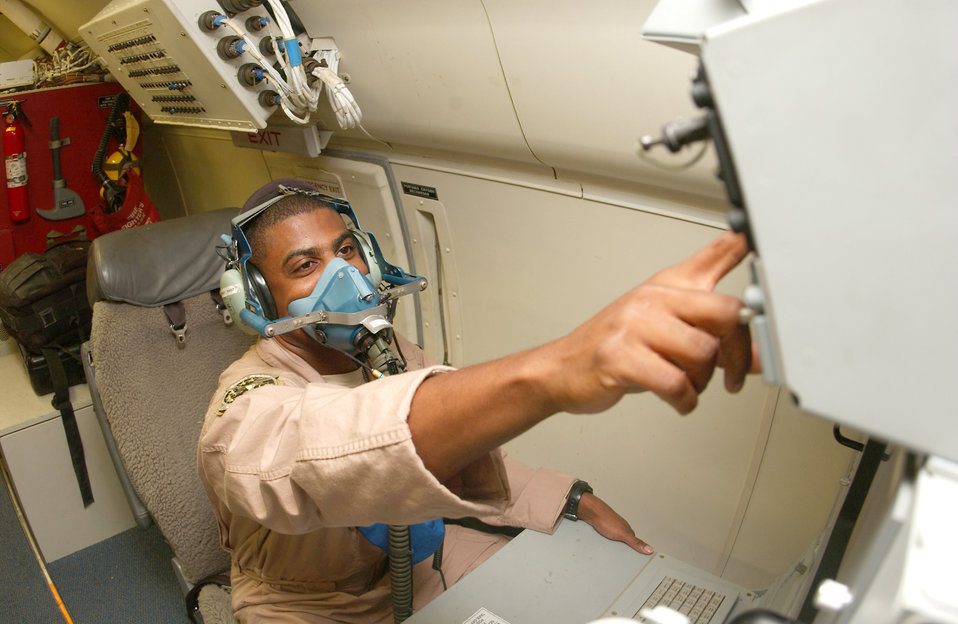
Sailing the skies

Maj. Sean Godfrey ensures his oxygen mask is in proper working order prior to departure Nov. 30 on an E-8C Joint STARS mission. Major Godfrey is assigned to the 12th Expeditionary Airborne Command and Control Squadron. The flight over Iraq marked 20,000 flying hours in support of Operation Iraqi Freedom by the Boeing 707 equipped with the Joint Surveillance Target Attack Radar System. Accomplishing that feat since early 2003 have been the combined efforts of the 12th EACCS, 16th EACCS and 128th EACCS, all from Robins Air Force Base, Ga., during alternating 90-day rotations. The JSTARS is an airborne battle management aircraft specializing in command and control, and intelligence, surveillance and reconnaissance gathering. Information gathered is passed in real time to servicemembers on the ground conducting combat operations.